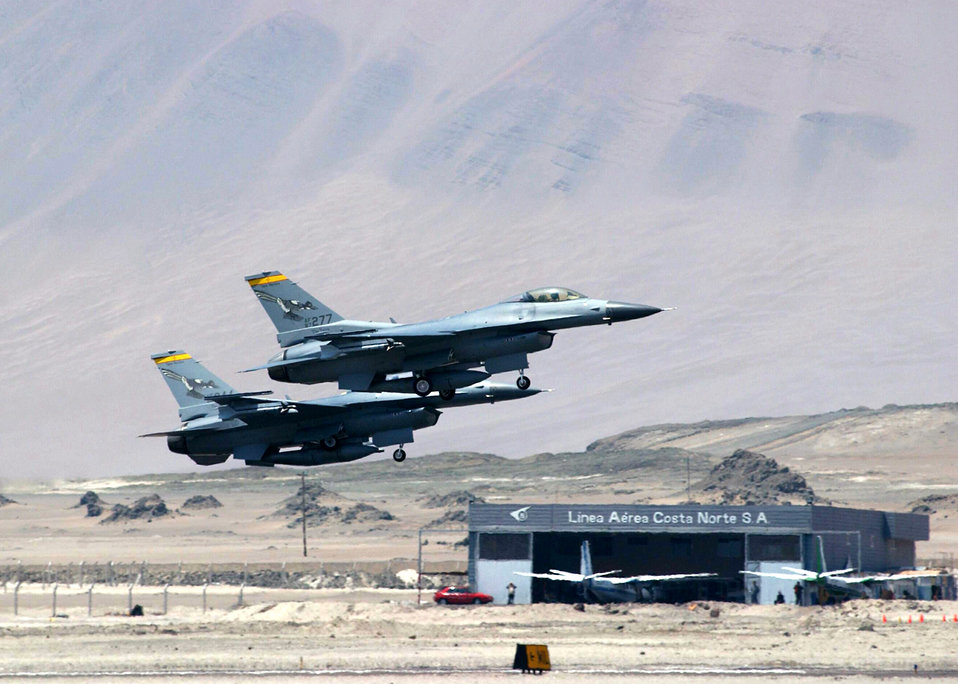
Chile time

IQUIQUE, Chile -- Capt. Paul Wells and Lt. Col. Francis Carillo officially kick off Exercise Salitre 2004 here by flying the first sortie of the exercise. Salitre 2004 is a multinational air training exercise taking place Sept. 27 to Oct. 8. The Airmen are F-16 Fighting Falcon pilots from the Air National Guard's 150th Fighter Wing at Kirtland Air Force Base, N.M. Air forces from Chile, Argentina and Brazil are joining nearly 150 U.S. Airmen for the exercise.